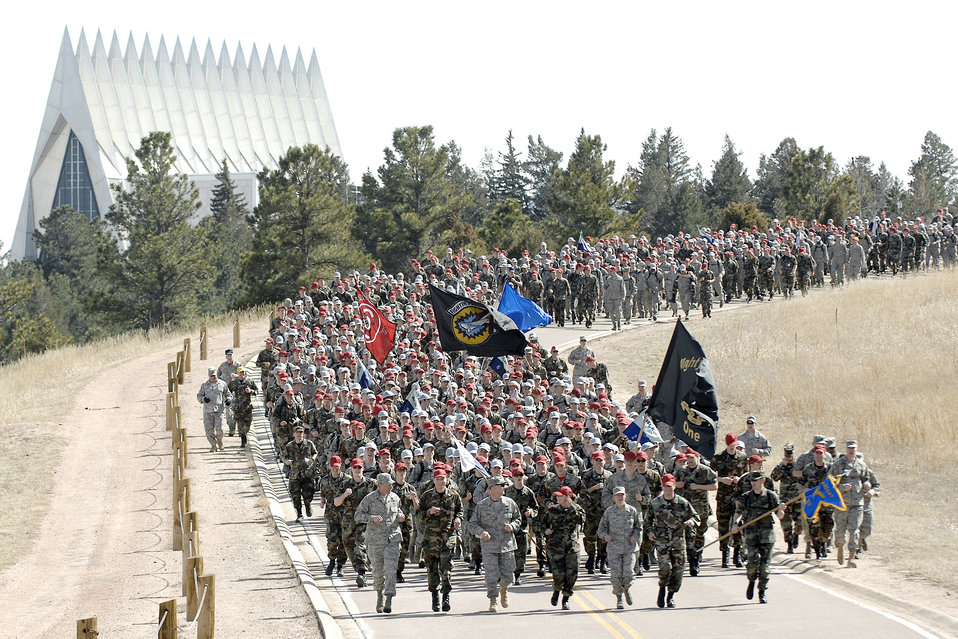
Academy freshmen attain status

The U.S. Air Force Academy freshman class of 2013 is led by Commandant of Cadets Brig. Gen. Samuel Cox, Dean of the Faculty Brig. Gen. Dana Born and Commandant of Cadets Superintendent Chief Master Sgt. Richard Ross on